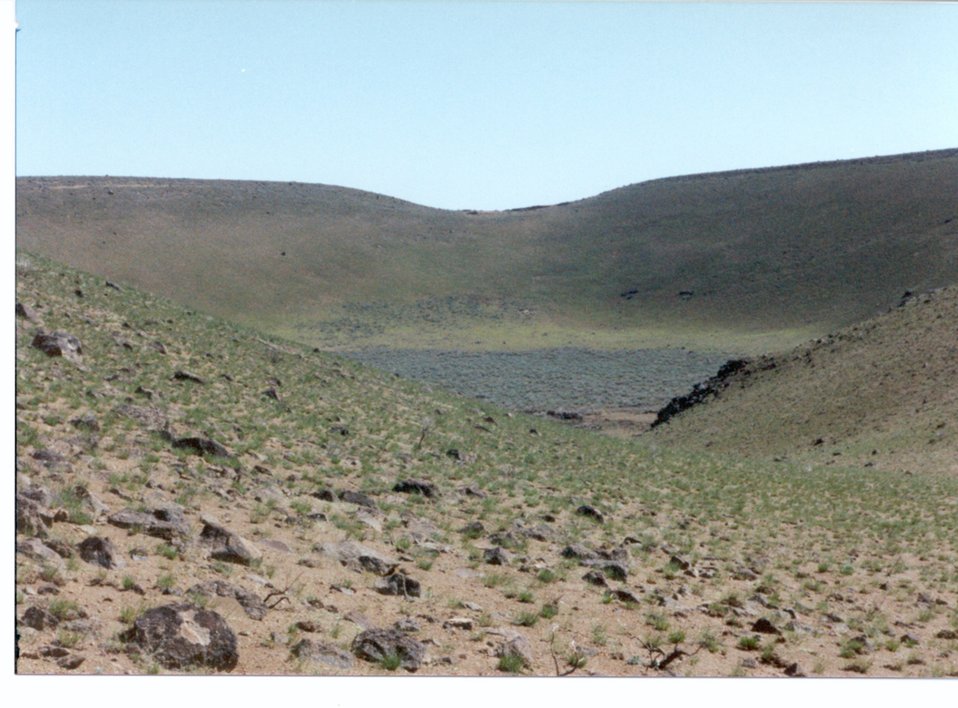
Sand Butte North to South Craters of the Moon Shoshone Field Office USRD Upper Snake River District